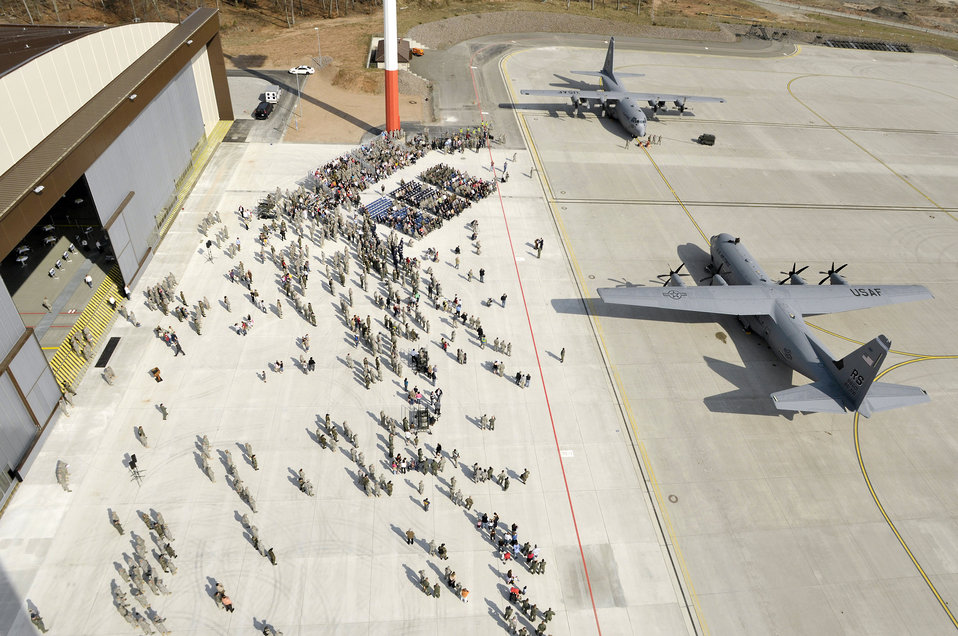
Ramstein welcomes new J-model C-130

A C-130J Super Hercules (front) and C-130E Hercules sit on the flightline at Ramstein Air Base, Germany, April 7. The J-model arrived during a ceremony that heralded a new era in operations for the 86th Airlift Wing there. The J-model is the first of 14 aircraft that are scheduled to arrive over the next 12 months to replace the older E-models.